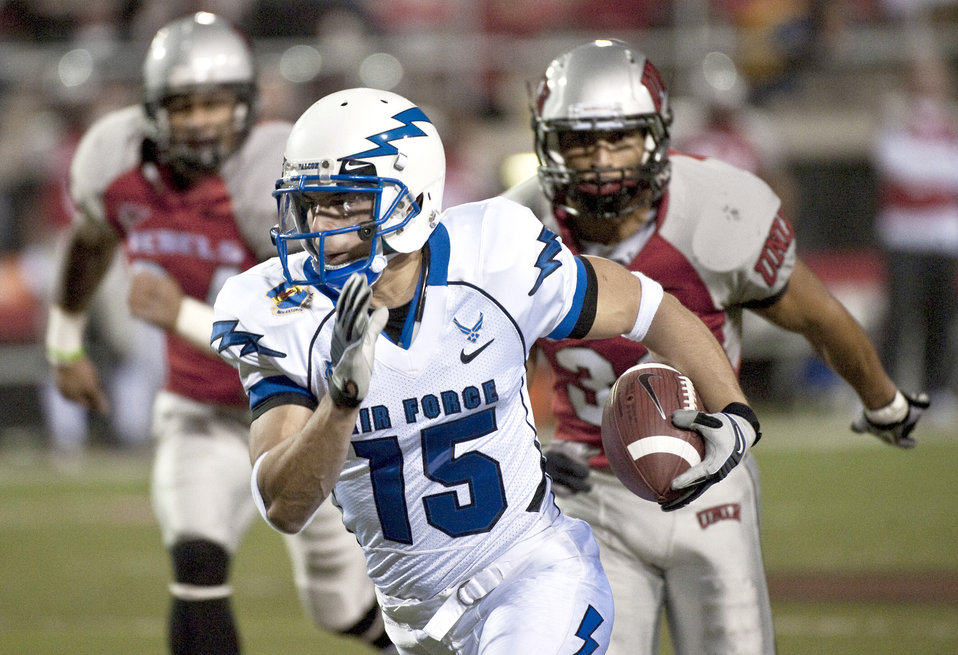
USAFA vs UNLV

Air Force wide receiver Jonathan Warzeka runs downfield during the Falcons' final game of the season against the University of Nevada, Las Vegas Nov. 18, 2010, in Las Vegas. Warzeka had two catches for 46 yards and a touchdown. The Falcons came back from a 17-7 deficit to defeat the Rebels, 35-20.